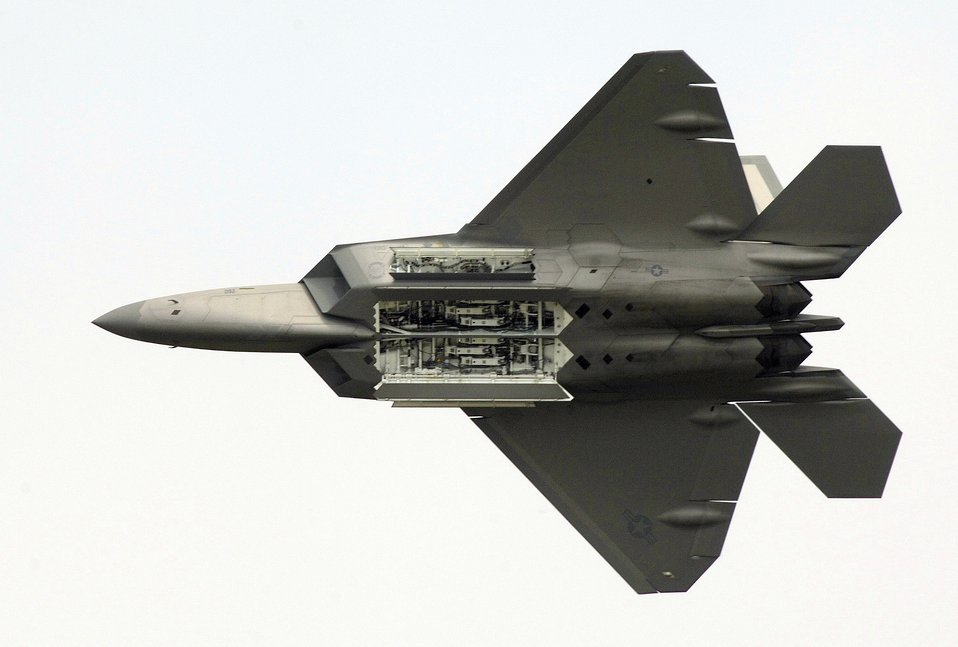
F-22A Raptor DEMO TEAM

Maj. Paul